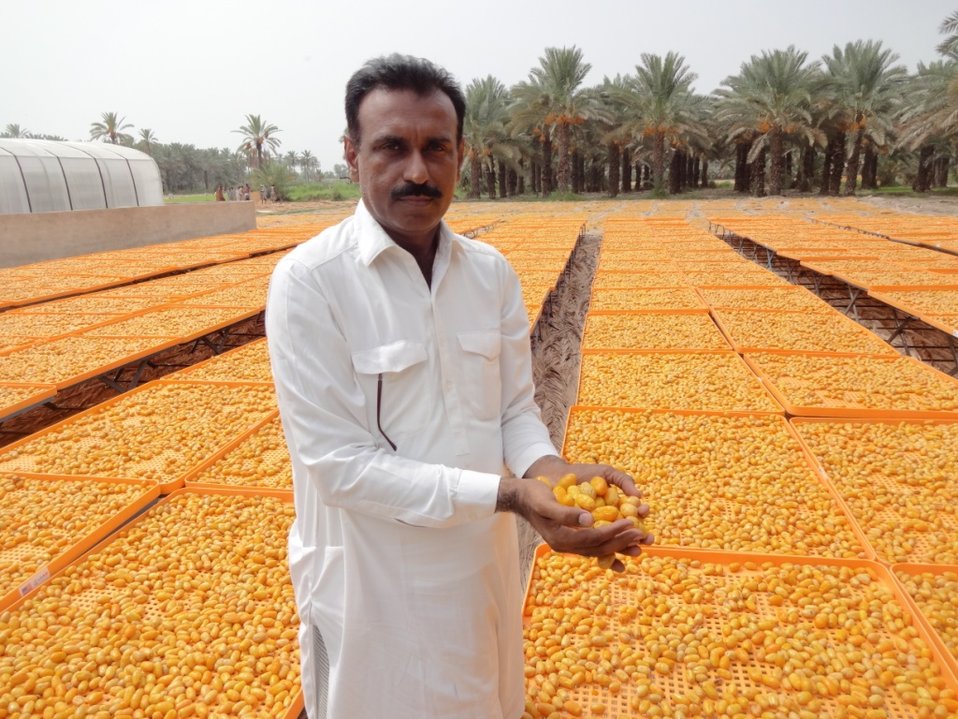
Dates Dost Program: Pakistan is the fifth largest producer of dates in the world and dates are the third largest horticulture crop grown with an annual production of 550,000 to 650,000 metric tons. But improper post-harvest handling and barely any disease